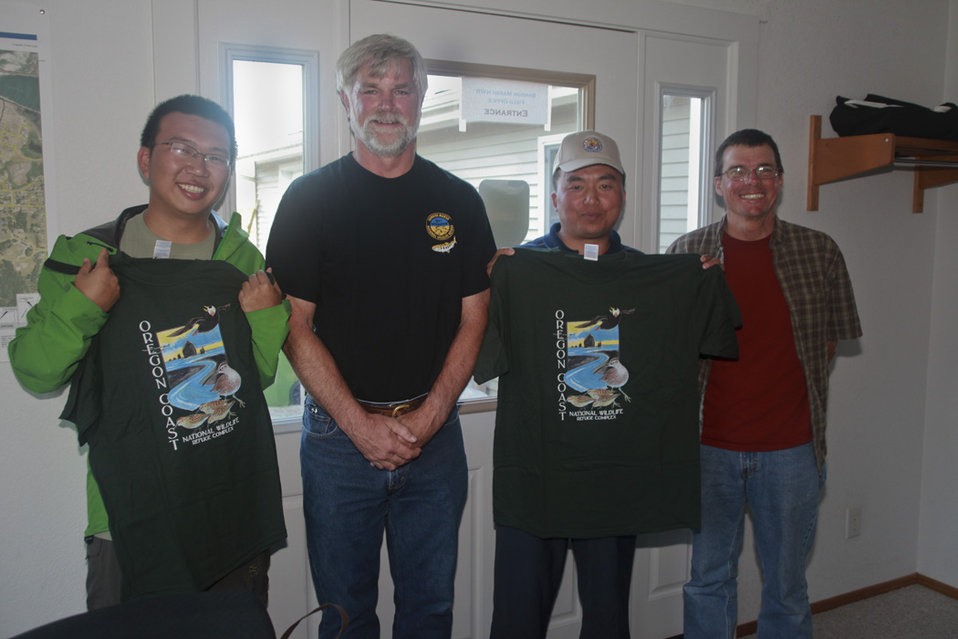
Jia Yefei, Project Director Roy Lowe, Xu Yingshou, Dave Ledig